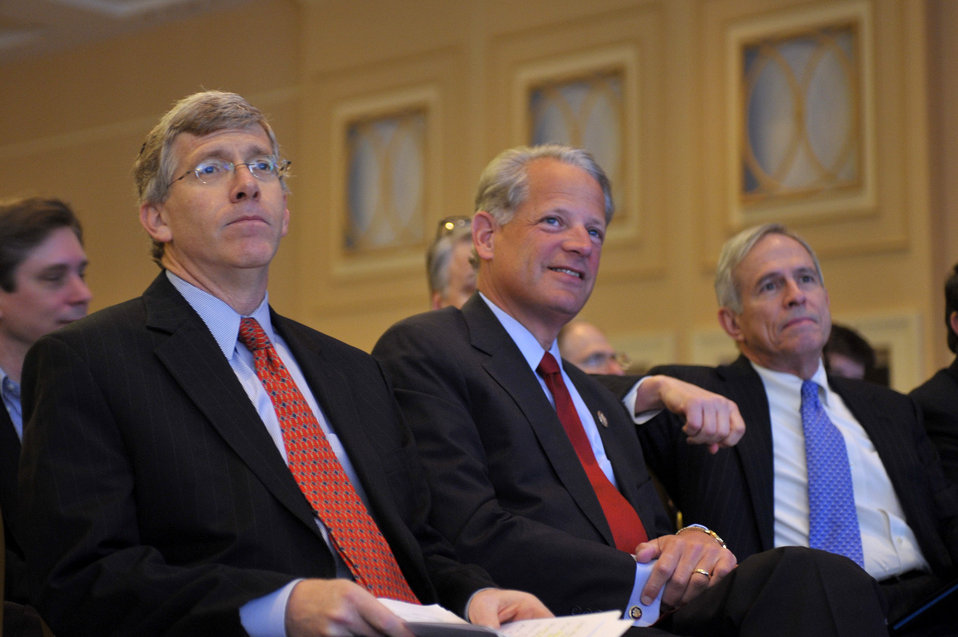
ARPA-E Energy Innovation Summit 2011, 70 of 83

Daniel Poneman, Deputy Secretary, US Department of Energy and Rep Steve Israel (D-NY). | Energy Department Image | Photo by Ken Shipp | Public Domain |